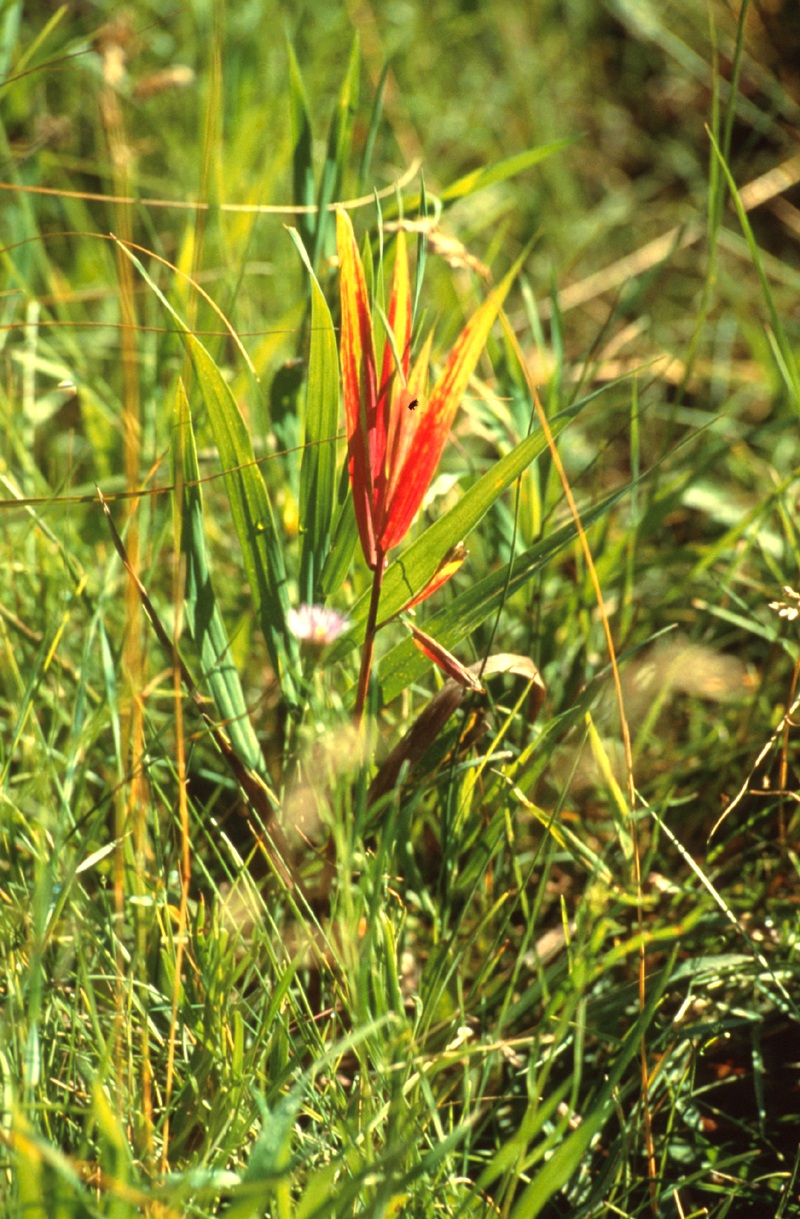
South Fork of the Snake River